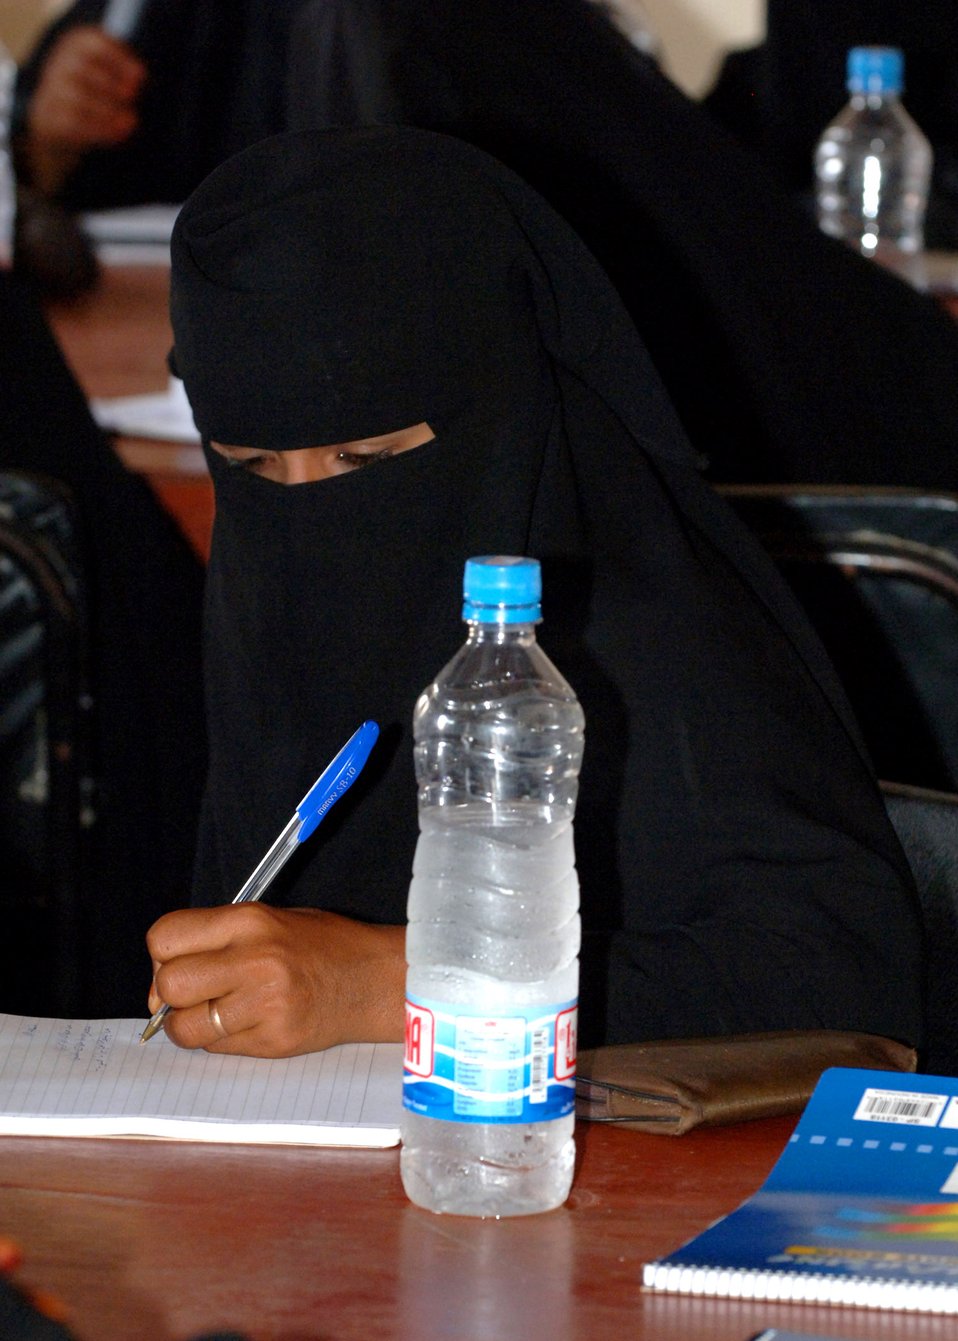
Veterinary project has big impact on small island

A Yemen animal health worker takes notes during a lecture as part of a Combined Joint Task Force-Horn of Africa veterinary civic action project on the small island of Socotra. The objective of the project was to teach women on the island basic animal husbandry techniques. Those learned skills will be used to improve the country's overall livestock health and productivity, as well as educate others villagers.